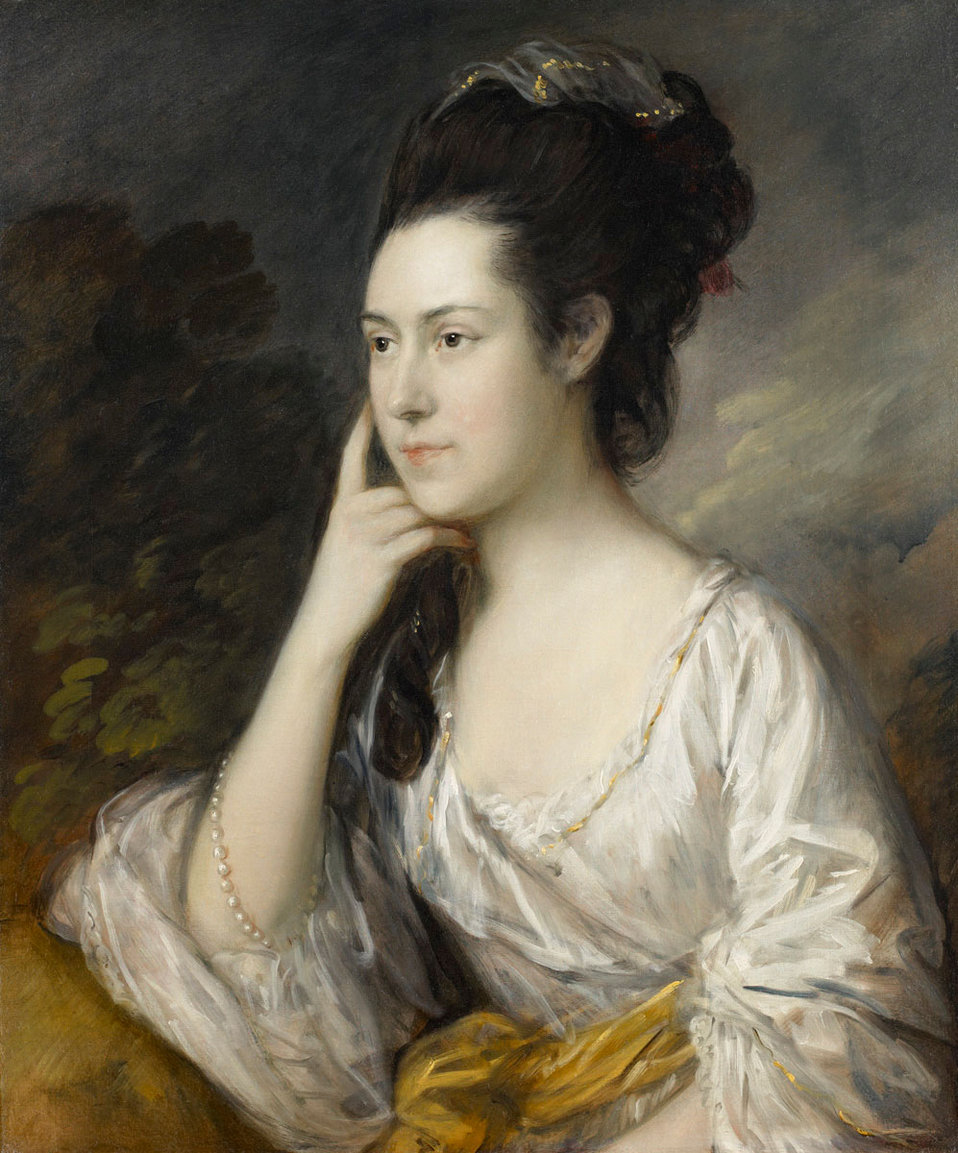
Lady Chad - Thomas Gainsborough - BMA